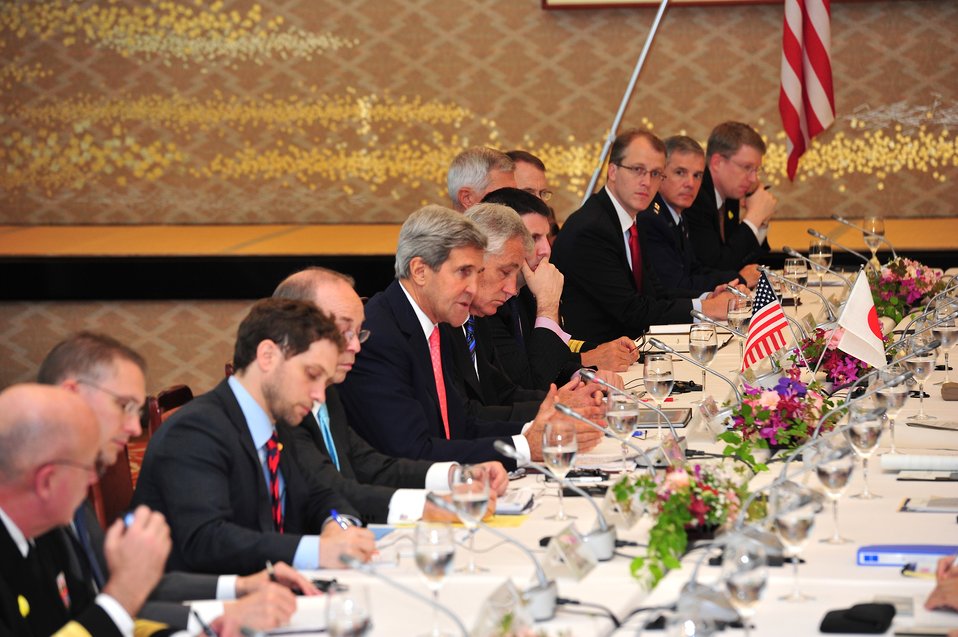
Secretary Kerry Delivers Remarks at the U.S.-Japan Security Consultative (2 2) in Tokyo

U.S. Secretary of State John Kerry makes an opening statement at the U.S.-Japan Security Consultative (2 2) meeting at Iikura Guest House in Tokyo, October 3, 2013.